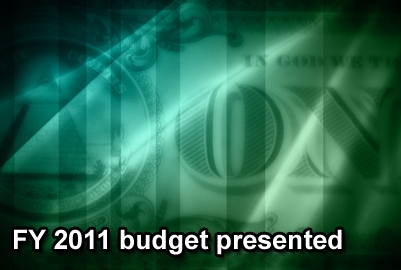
Air Force senior leaders take FY 2011 budget request to Capitol Hill

Air Force officials addressed the service's fiscal year 2011 budget request before the Senate Appropriations Defense Subcommittee May 12.